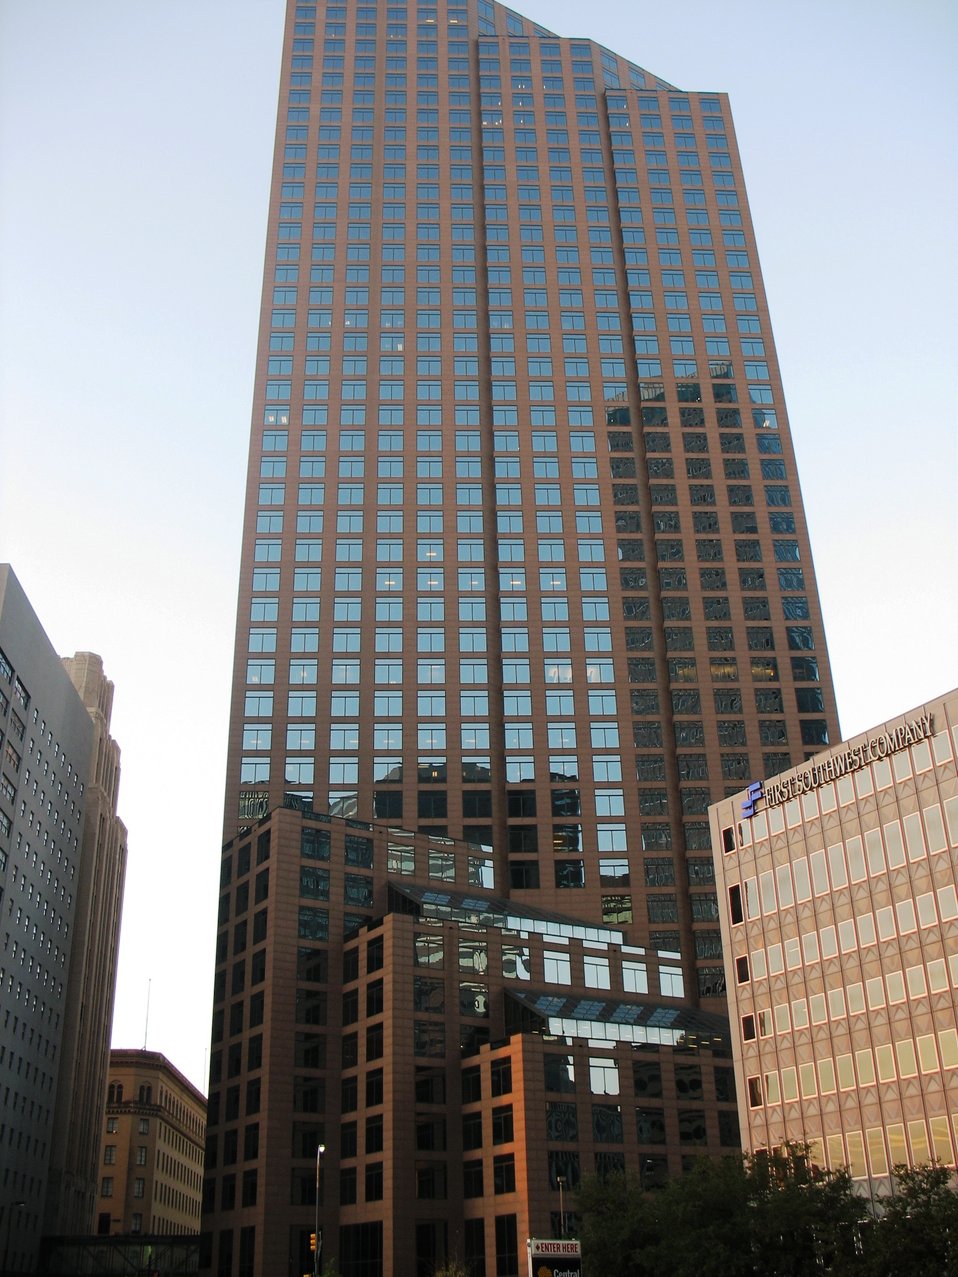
1700 Pacific from Saint Paul and Bryan.